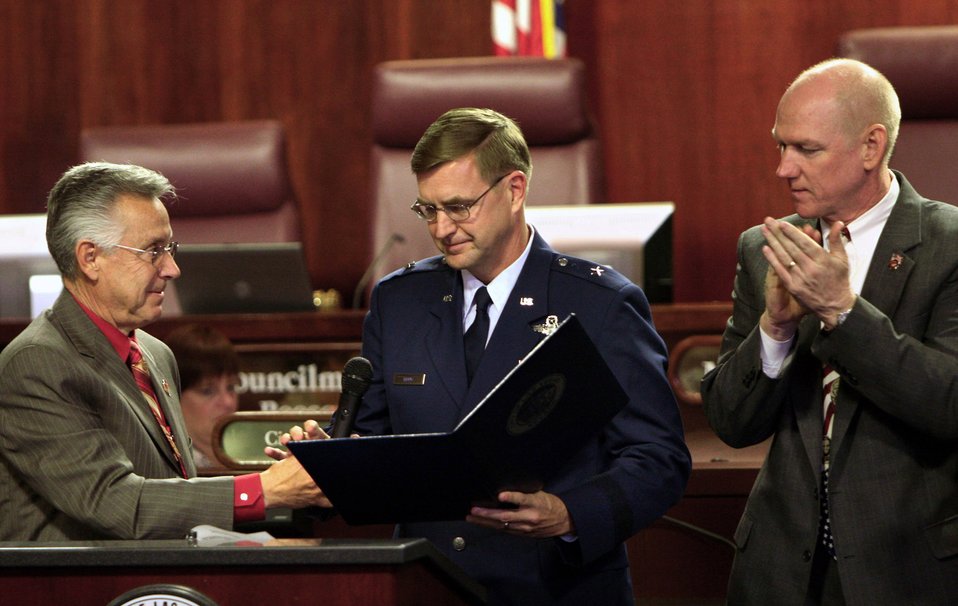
Aviation pioneers attend Heritage to Horizons ceremony

City of Las Vegas Mayor Pro Tem Gary Reese presents a proclamation to Brig. Gen. Stephen L. Hoog as Councilman Larry Brown looks on Nov. 7 in Las Vegas. The proclamation recognizes the 60th anniversary of the Air Force and proclaimed Nov. 5 through 11 as Air Force Week in Nevada. Air Force officials hosted several events to commemorate the occasion culminating in the Nellis Aviation Nation Air Show Nov. 10 and 11. General Hoog is the 57th Wing commander at Nellis Air Force Base, Nev.